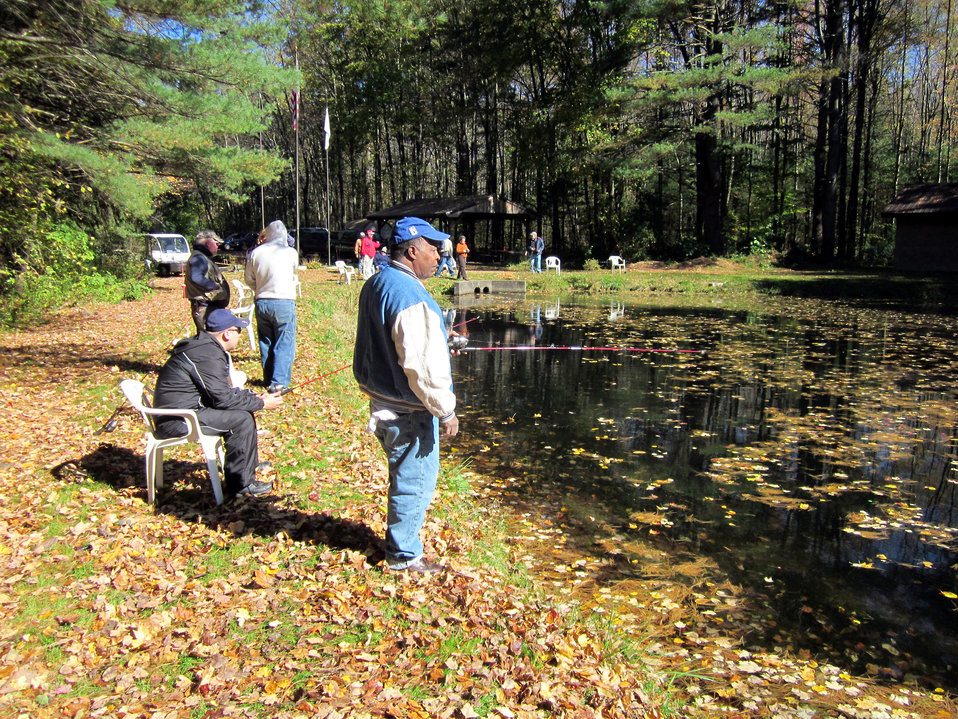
Great day to be outside

October 13, 2012, Sunderland, MA: Veterans and volunteers enjoy fishing for trout in a pond at the U.S. Fish and Wildlife Service's Richard Cronin National Salmon Station.